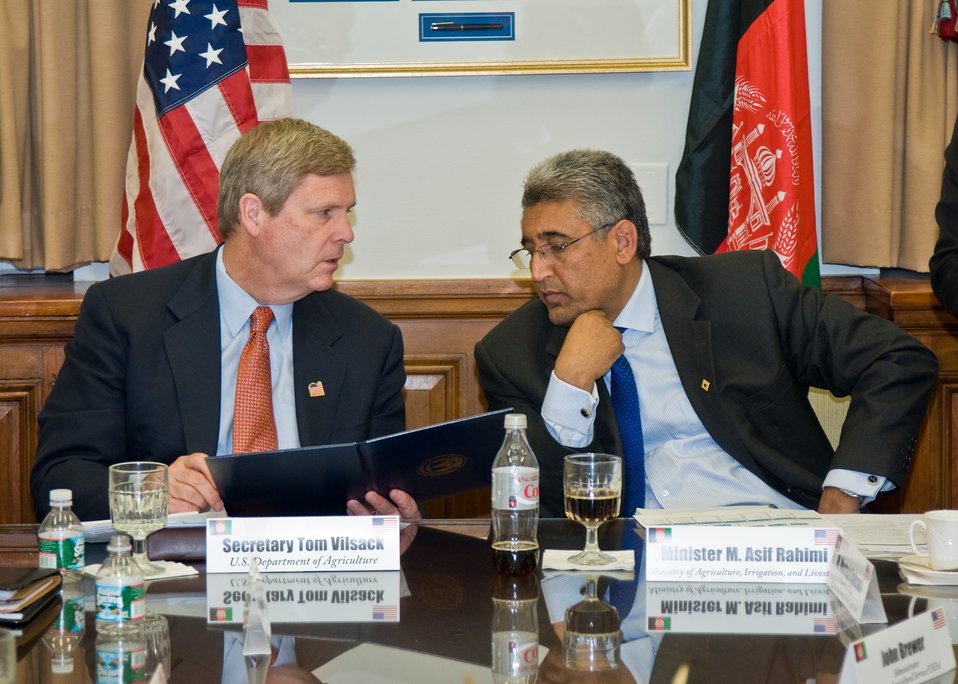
Agriculture and Rural Development Interagency Working Group Session of the U.S.-Afghanistan Strategic Partnership Dialogue

U.S. Department of Agriculture Secretary Tom Vilsack and Afghan Agriculture Minister Rahimi discuss issues at the Agriculture and Rural Development Interagency Working Group Session of the U.S. Afghanistan Strategic Partnership Dialogue at the U.S. Department of State, Washington, D.C., May 11, 2010.